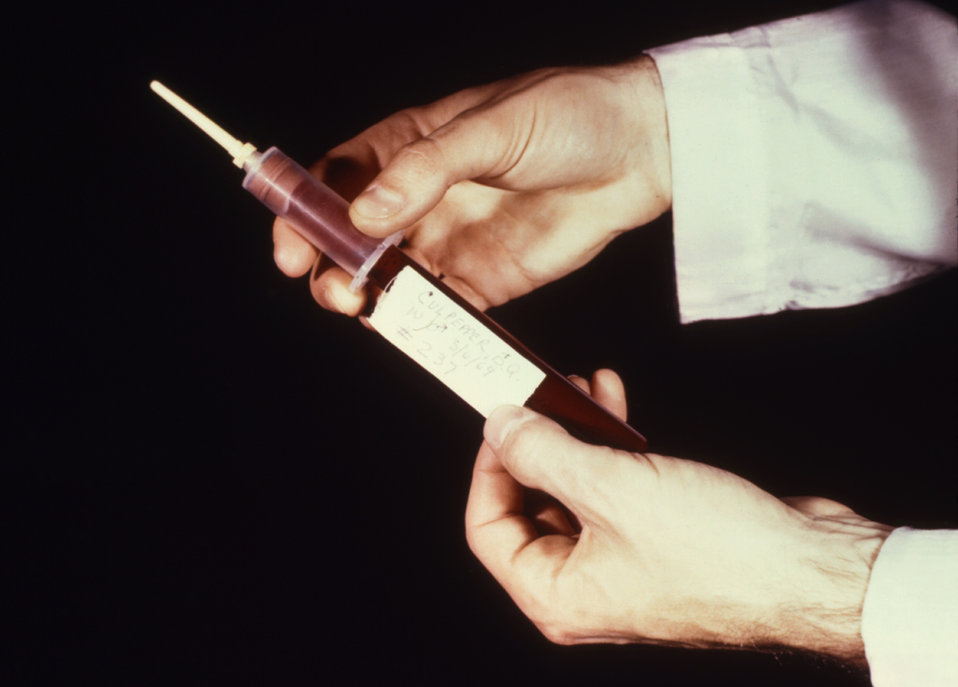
This photograph shows a CDC clinician attaching an identification label to a 'Vacutainer �' containing a blood sample.